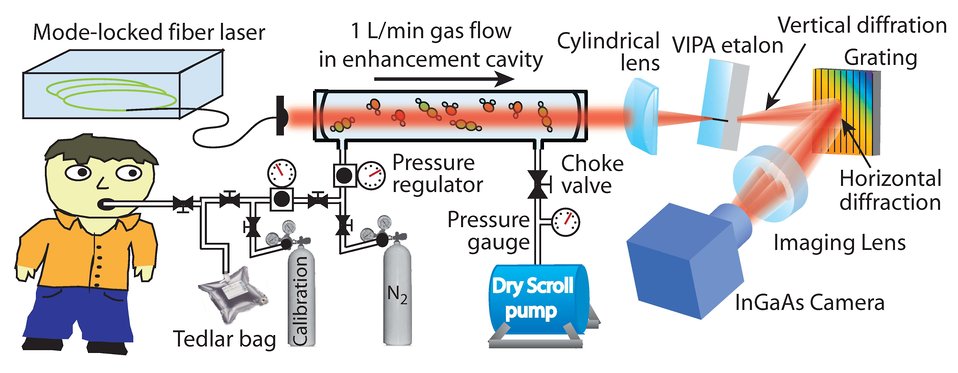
Frequency Comb

Schematic of a breath analyzer that uses frequency combs, an optical tool that led to a recent Nobel Prize in Physics for JILA fellow Jan Hall.